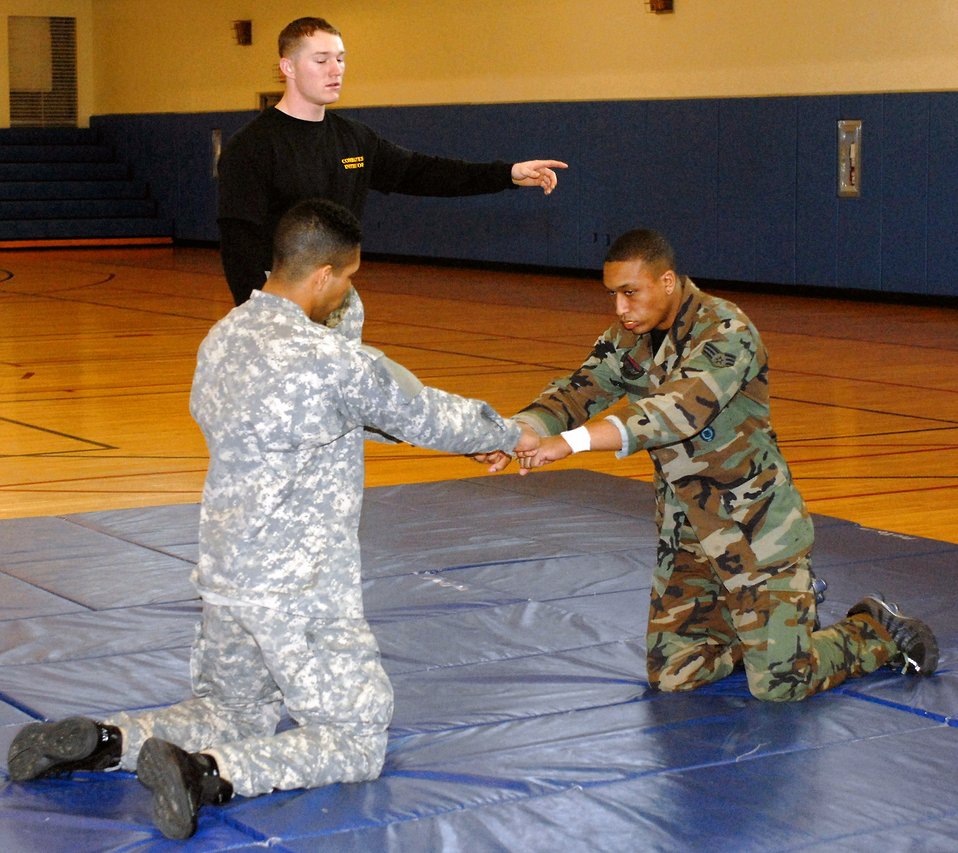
Airmen, Soldiers fight

Senior Airman Tesfaya Campbell and Army Pfc. Grayson Damon prepare for hand-to-hand combat Feb. 14 at Kunsan Air Base, South Korea. This training is part of the Army warrior ethos. The training is now offered to Airmen here to enhance mission effectiveness between the two services. Air Force officials are currently working on a service specific hand-to-hand combat training for all Airmen. Currently, the Air Force's Officer Training School has implemented a new close-combat course into its curriculum. Airman Campbell is assigned to the 8th Security Forces Squadron and Private Damon is assigned to the 144th Charlie Company Air and Missile Defense unit.